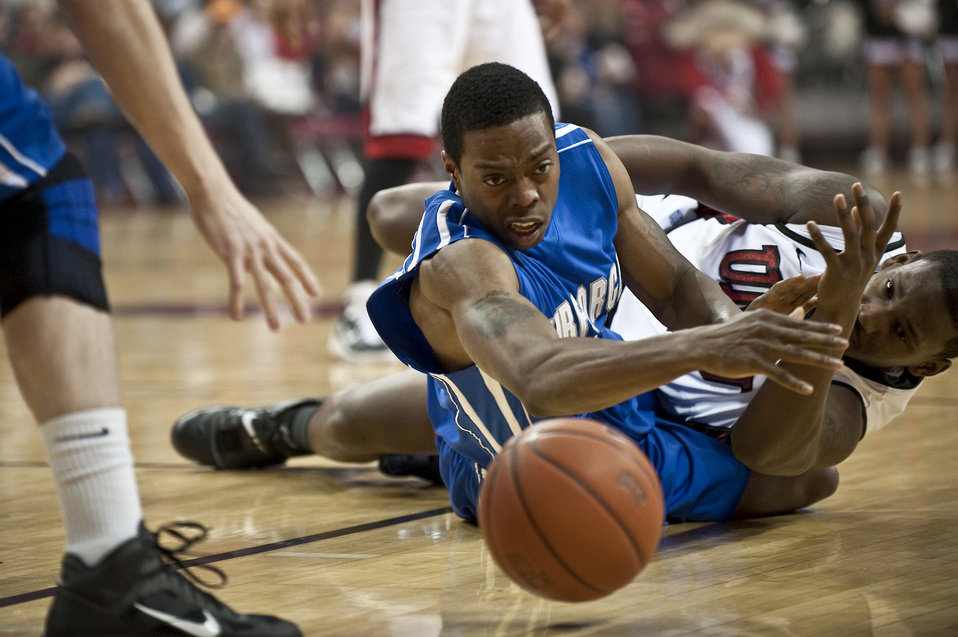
Falcons versus Rebels

Falcons senior guard Evan Washington dives for a loose ball early in the first half of a mountain west conference basketball game against the University of Nevada, Las Vegas Runnin' Rebels Feb. 15, 2011, at the Thomas and Mac Center in Las Vegas, Nev. The Air Force Falcons came up short against UNLV 49-42, making their record 13-11 overall and 4-7 in the Mountain West Conference.